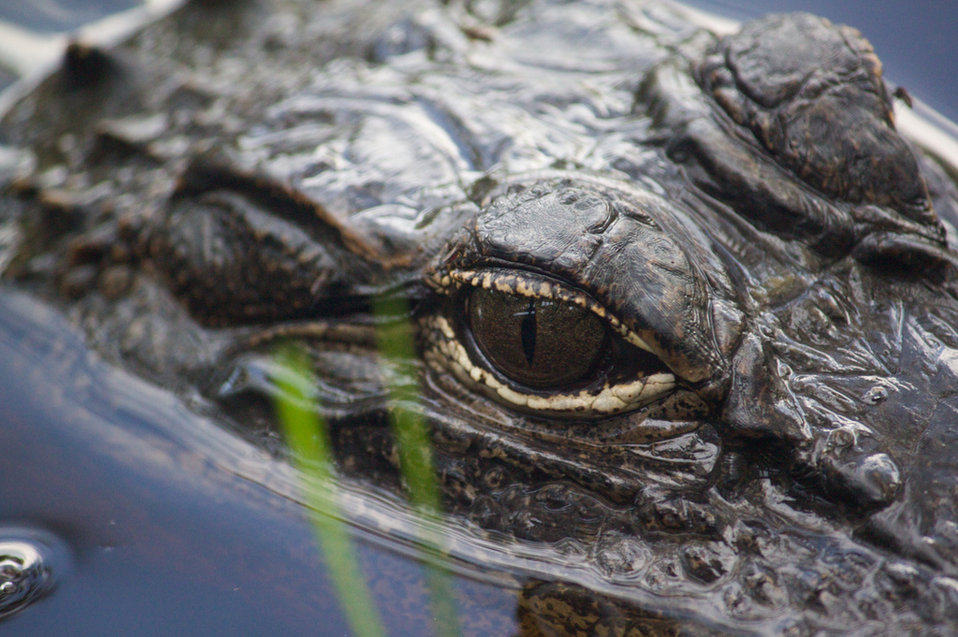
alligator

J.N. Ding Darling National Wildlife Refuge, FL